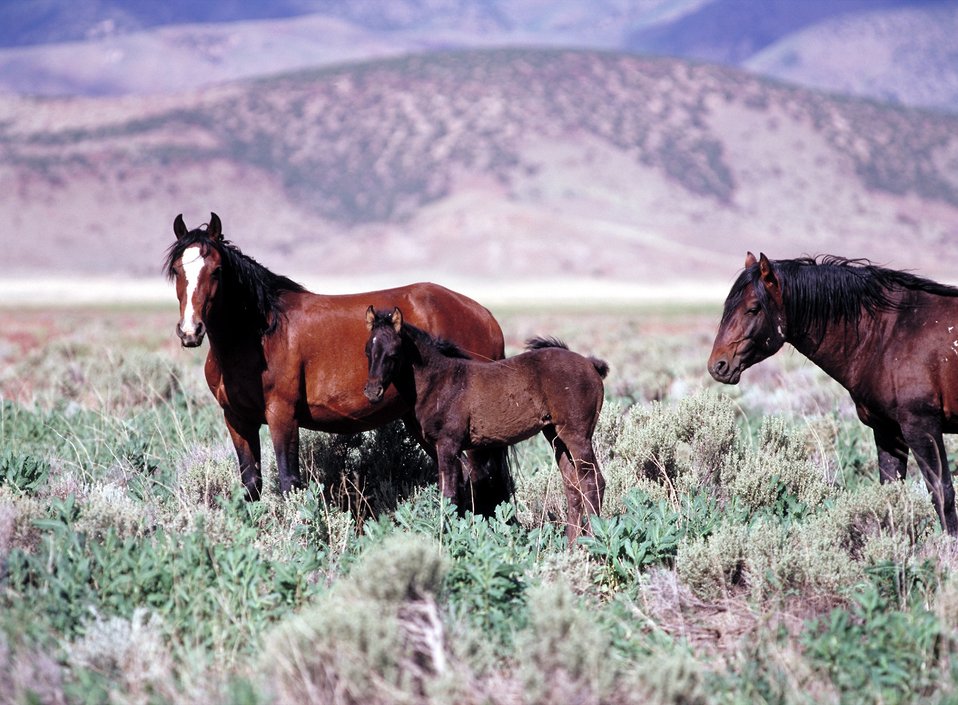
Onaqui Herd near Dugway, Utah.